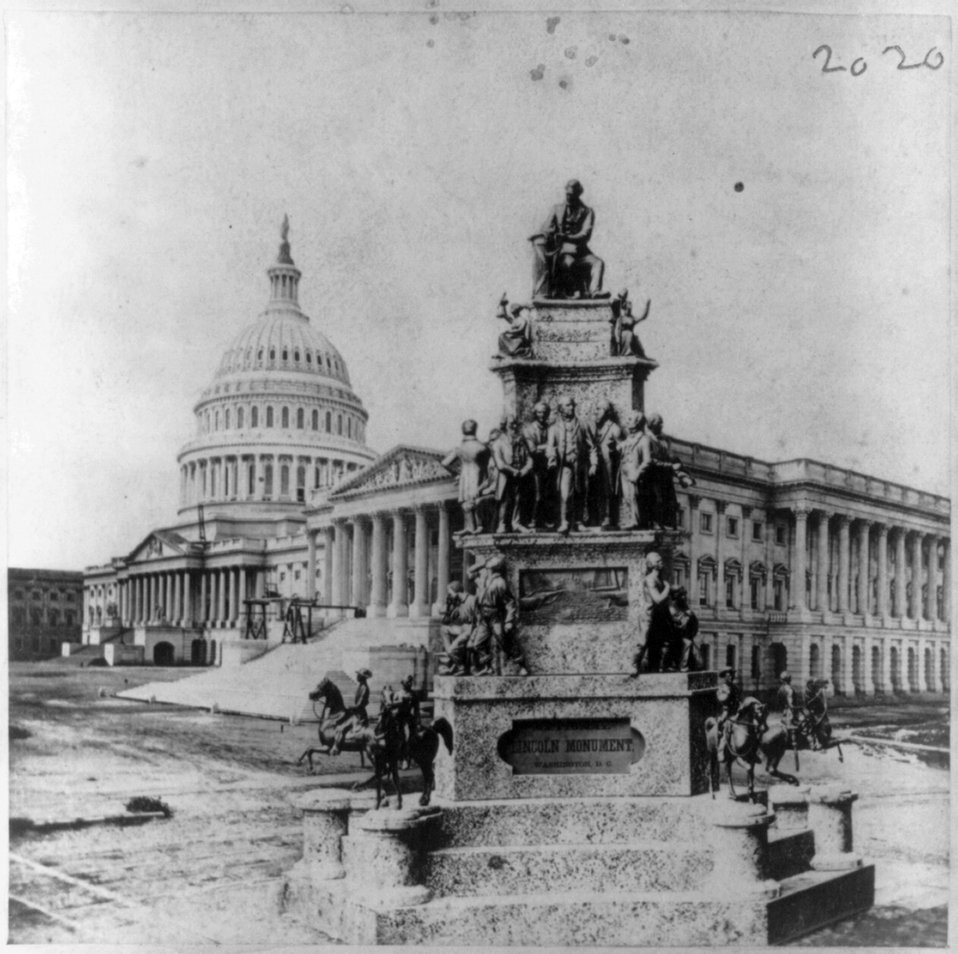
Proposed Lincoln Memorial that was never built

Stereograph showing a proposed monument to President Abraham Lincoln that was designed by Clark Mills in 1867 but was never funded.